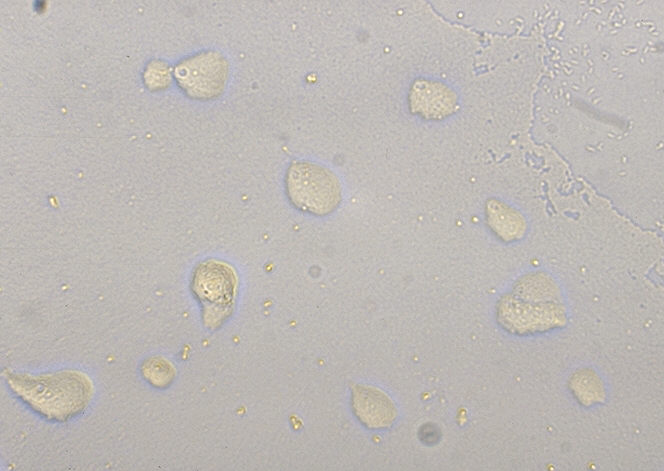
Culture of Naegleria gruberi in Petri dish. Parasite, ameba.